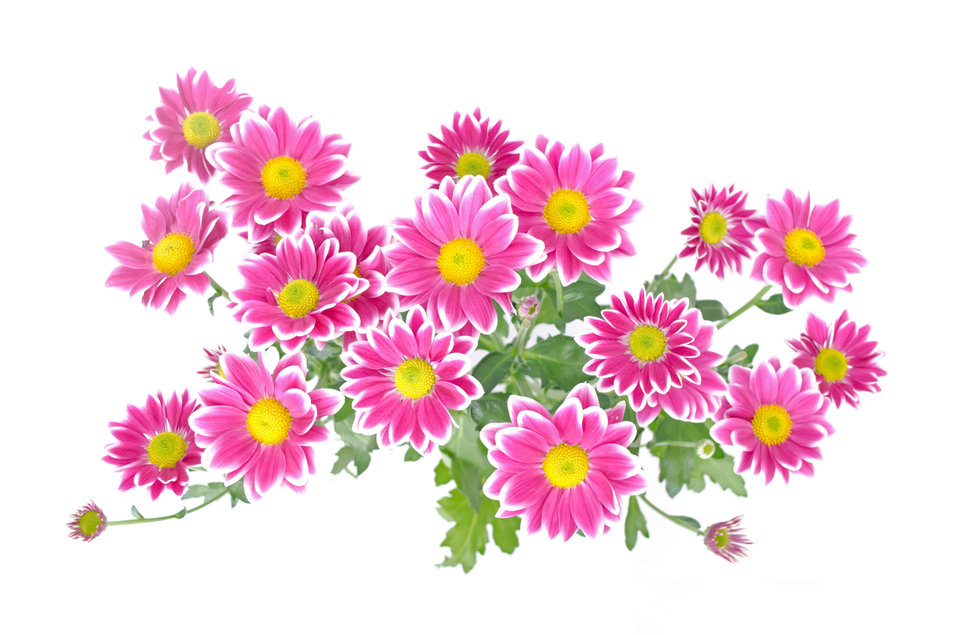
Flowers on the white background.